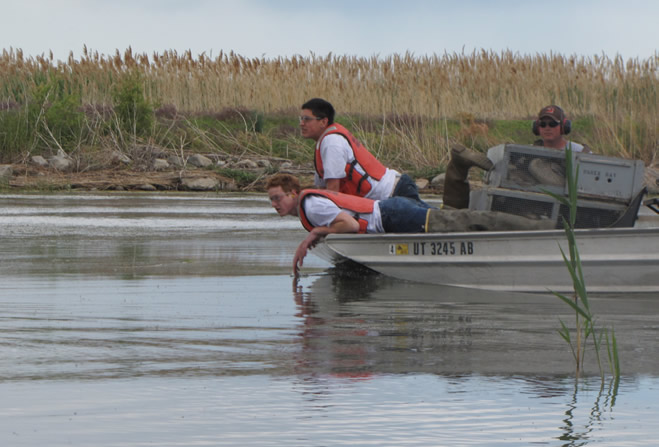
Bird Banding

Youth Conservation Corps (YCC) participants travel on airboats in the Bear River Migratory Bird Refuge searching for Canada geese for a banding project. The YCC crew assisted the Utah Department of Natural Resources with the banding project during their eight week program.